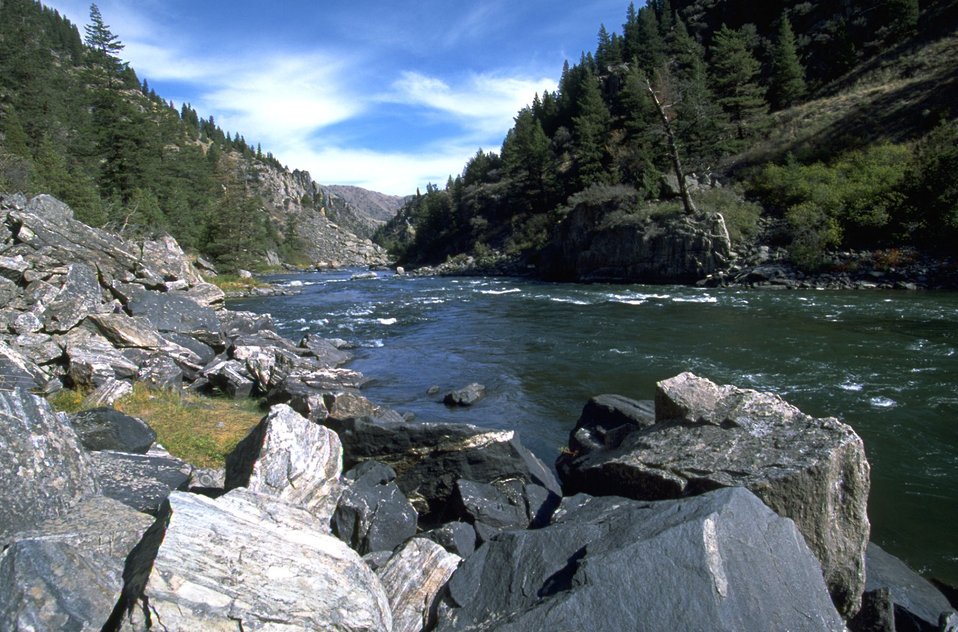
Looking downstream of the Madison River